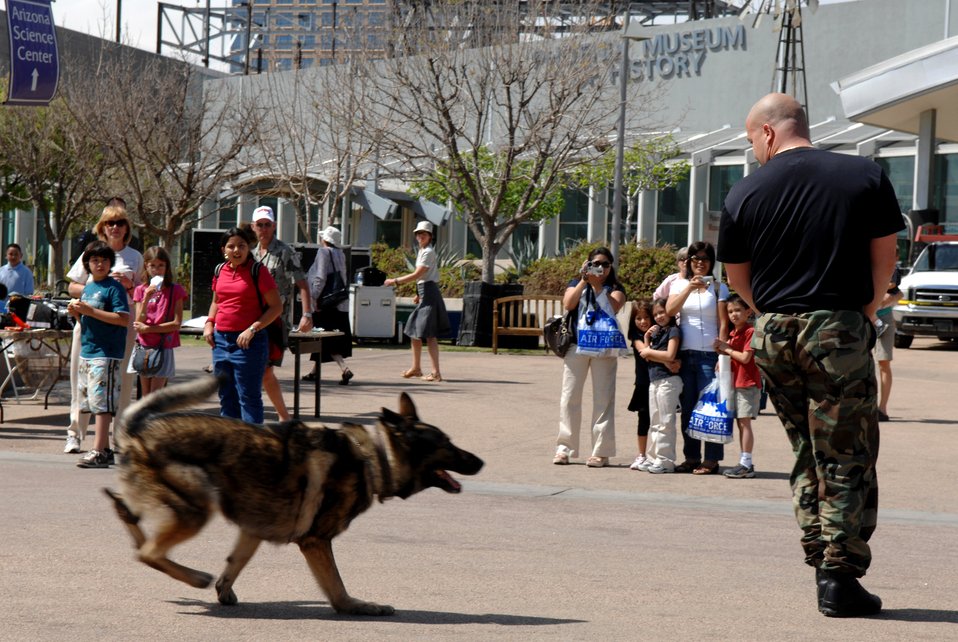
Air Force Week displays highlight airpower

Cito, a security forces military working dog, pursues a